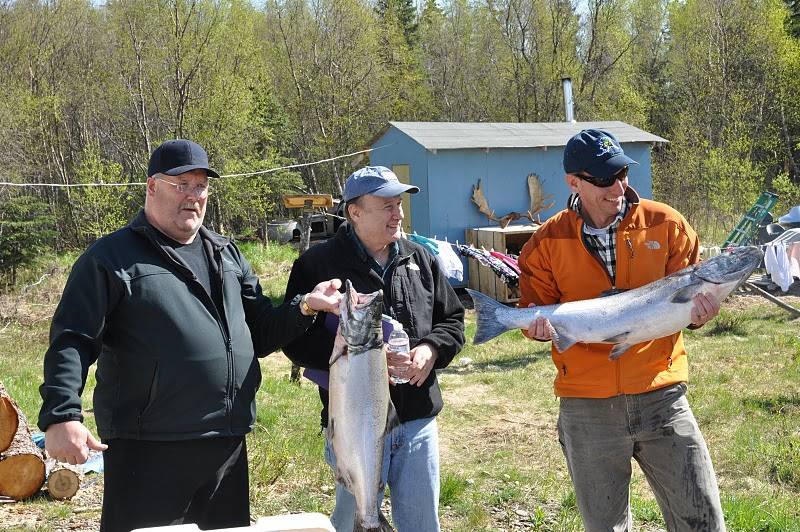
June, 2011 First Kings of the season

EPA staff admire the first Chinook salmon (also called king salmon) of the season brought in by a local fisherman.

The first catch of the season is a culturally and spriritually important annual rite. This fisherman explained how he divides the first catch among elders and others who cannot catch their own fish.

Like many local residents, he depends on each season's catch to help feed his family through the winter.

Visit www.epa.gov/bristolbay for more information about EPA's Bristol Bay Watershed Assessment.